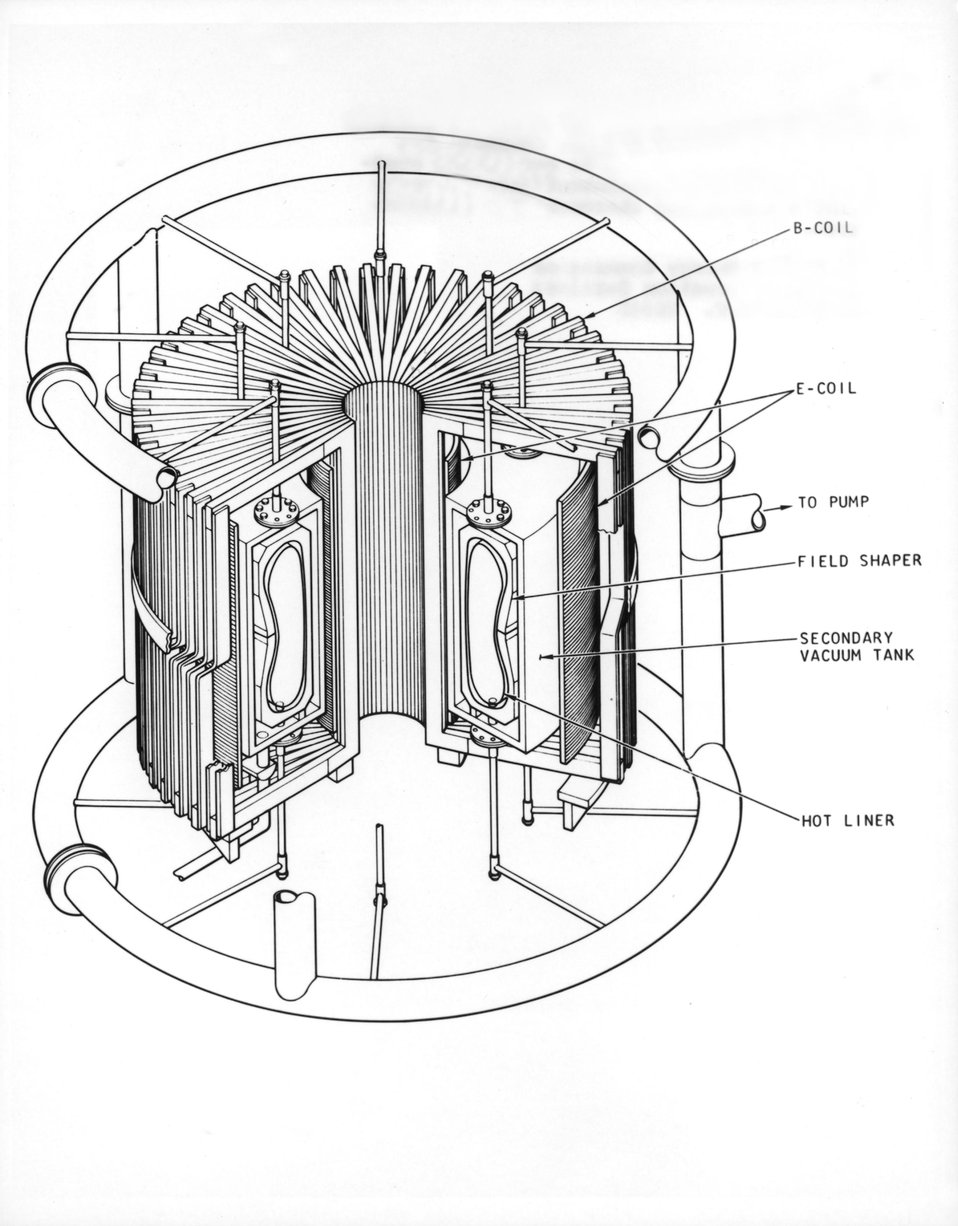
A cutaway drawing of the Doublet II device at General Atomics Company, San Diego, California. This is one of the studies of hot plasma containment carried on by the AEC's controlled thermonuclear research program. c. 1974